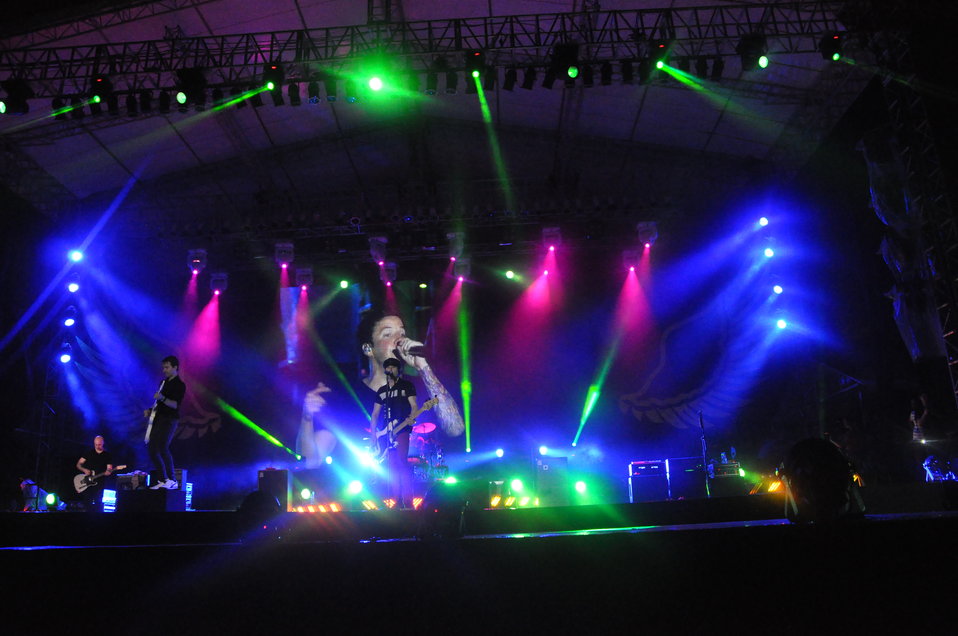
Simple Plan performs at MTV EXIT concert in Hanoi against human trafficking

USAID co-sponsors MTV EXIT concert, campaign against human trafficking